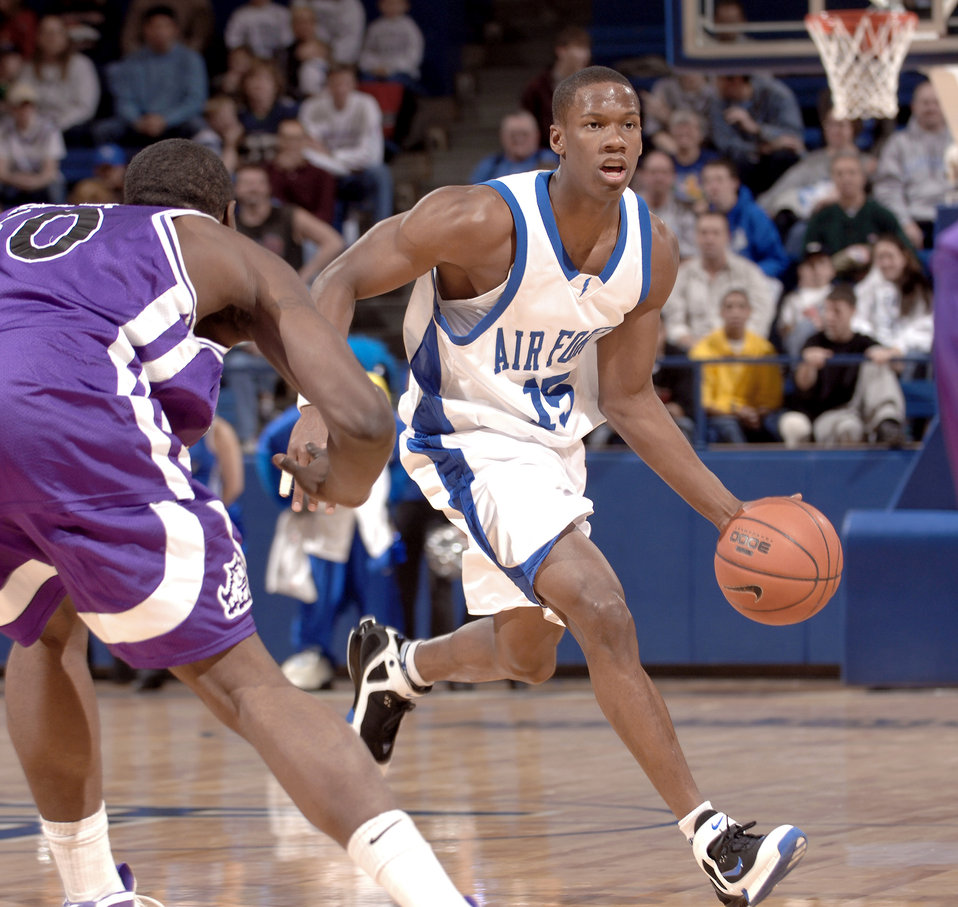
Antoine Hood

Then U.S. Air Force Academy cadet Antoine Hood looks down court during play against Texas Christian University Jan. 14, 2006.